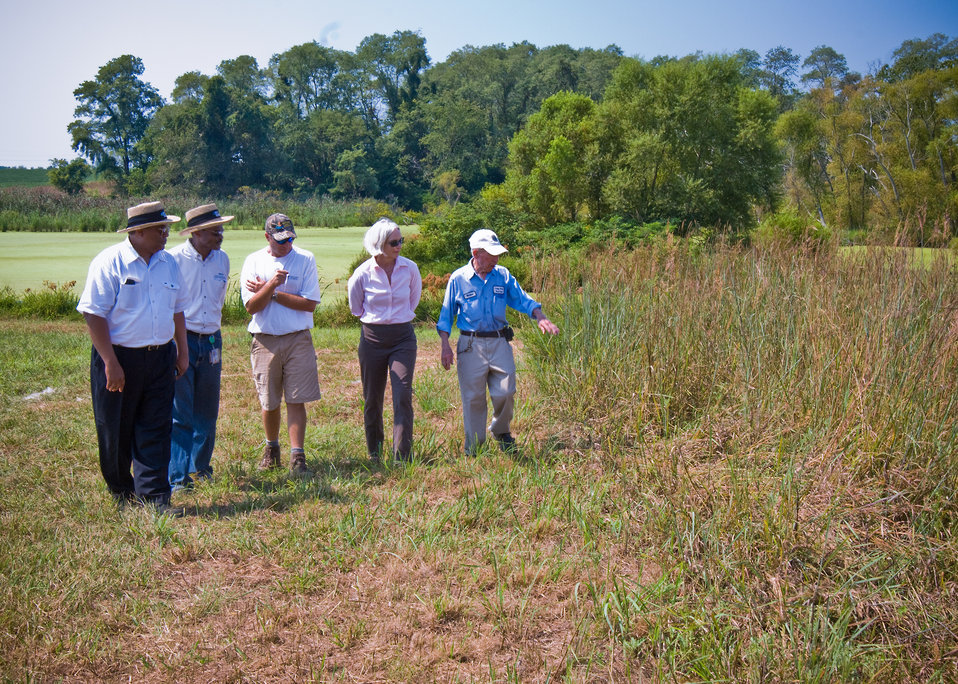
From left: Jon Hall, United States Department of Agriculture, Natural Resources Conservation Service (NRCS), State Conservationist, Leonard Jordan, Natural Resources Conservation Service (NRCS), Regional Conservationist, East Region, Josh Homyak, Maryland Department of Natural Resources, Ann Mills, Deputy Undersecretary, Natural Resources and Environment and Wickes Wescott, Chairman, Kent County (Maryland) Soil Conservation District and a local farmer discuss the benefits of soil and water conservation measures for wild life habit during a farm tour for federal, state, local agencies and conservation partners to learn about innovative conservation solutions and technologies funded for the Chesapeake Bay watershed. The tour was held on the Shellman Farm in Millington, Maryland along the Chester River a tributary of the Chesapeake Bay, Wednesday, September 1, 2010.